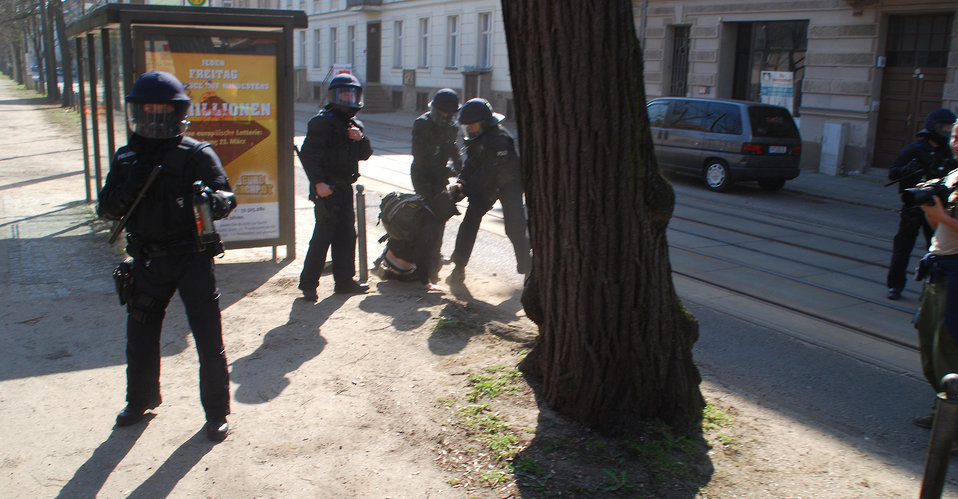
Proteste gegen den Nazi-Aufmarsch am 24.3.2012 in Frankfurt (Oder)